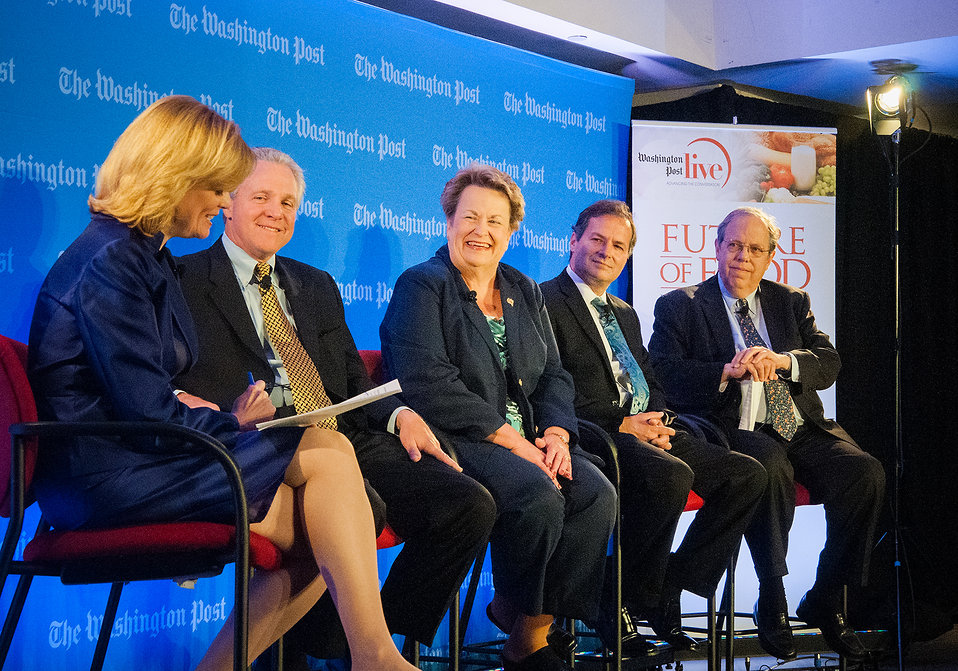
(L to R) Washington Post Live Editor and moderator Mary Jordan introduces members of the first panel: The Growing Consumer Demands for a Healthy, Sustainable Food System – Samuel Roberts Noble Foundation President and Chief Executive Officer (CEO) William Buckner, School Nutrition Association President Sandra Ford, World Food Program U.S. Relations Office Director Jon Brause, and Food Research and Action Center President Jim Weil during the annual live forum, “Future of Food: Building a Sustainable Food System 2013,” sponsored by the Washington Post in Washington, D.C. on Wednesday, May 22, 2013. Agriculture Secretary Tom Vilsack and leading agricultural, government and nutrition experts discussed expanding healthy, sustainable food systems including public-private partnerships, the market’s role in nutrition and the future of agricultural innovation.